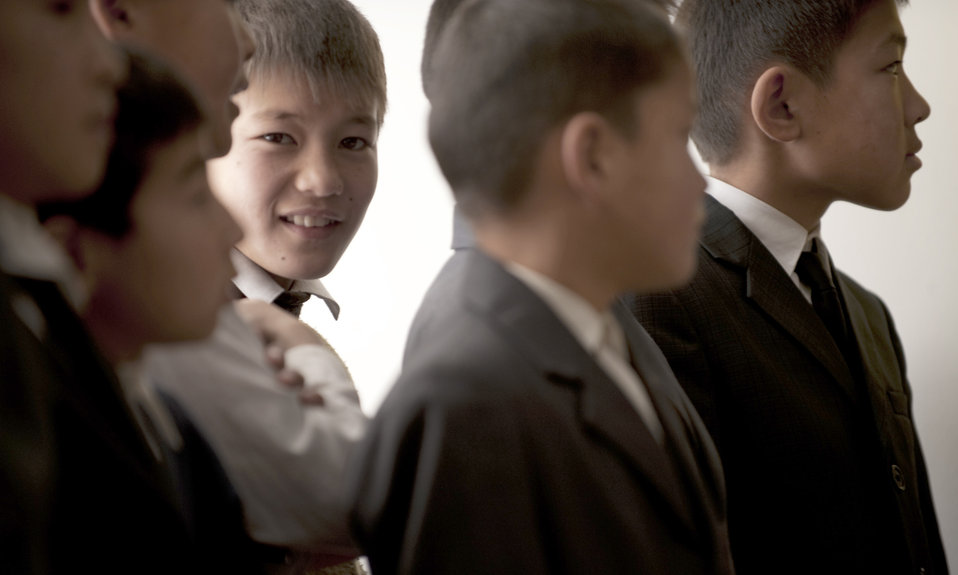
Kyrgyz, U.S. servicemembers distribute coats to Koi-Tash students

Chuiskaya Region Boarding School-Gymnasium students watched their peers perform a cultural concert Nov. 11, 2010, at their school in Koi Tash, Kyrgyzstan. Kyrgyz and U.S. military members gave students coats, blankets and hats as part of Operation Warm and Dry II.